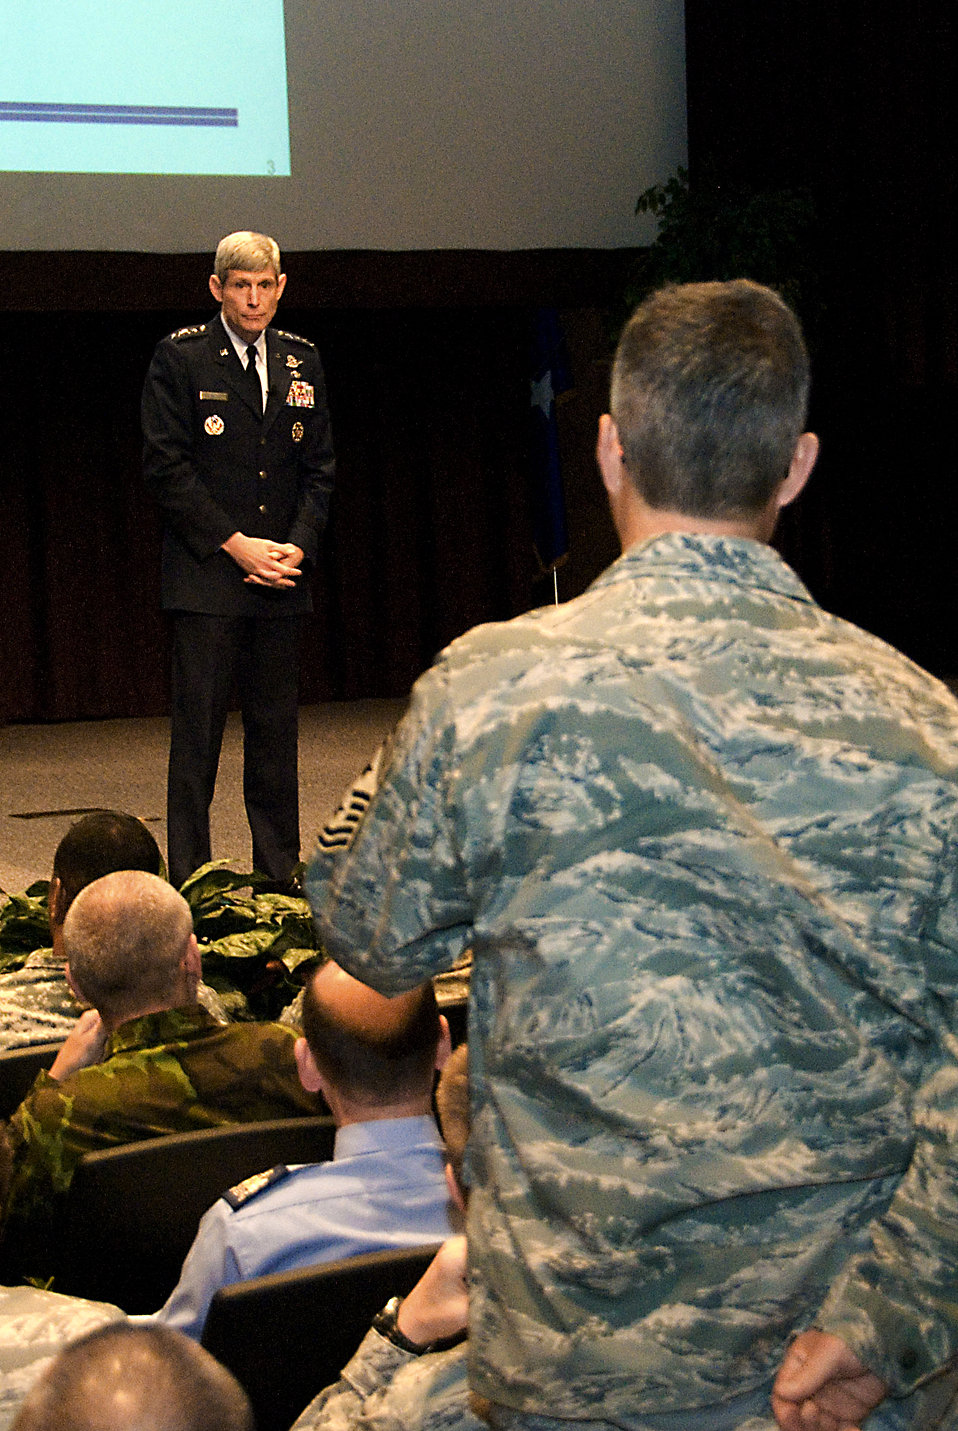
2010 Senior Enlisted Leaders Summit

Air Force Chief of Staff Gen. Norton Schwartz fields a question from an attendee at the Senior Enlisted Leaders Summit at Maxwell Air Force Base, Ala., May 4, 2010. Hosted by Chief Master Sergeant of the Air Force James Roy, the summit brought together approximately 375 Air Force, joint and coalition senior enlisted representatives.